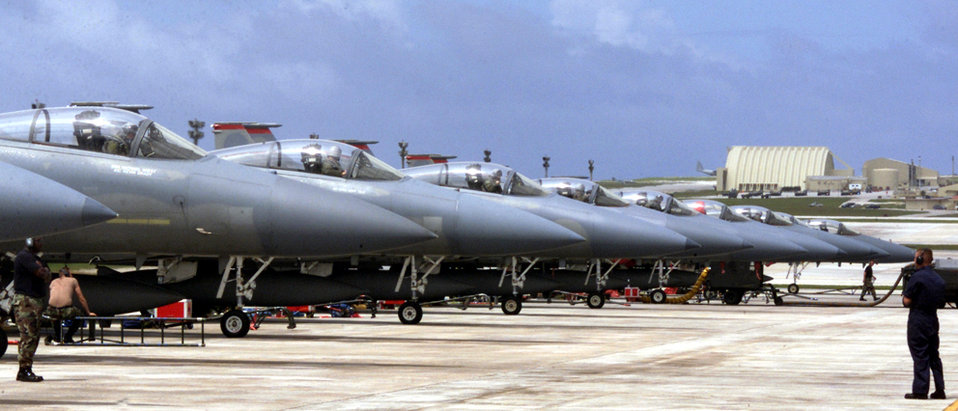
A gathering of Eagles

ANDERSEN AIR FORCE BASE, GUAM -- A row of F-15 Eagles, deployed from Kadena Air Base, Japan, for exercise Tandem Thrust 03, line up before takeoff April 24. The exercise is a joint endeavor conducted in the Marianas Islands including forces from the U.S., Canada and Australia.